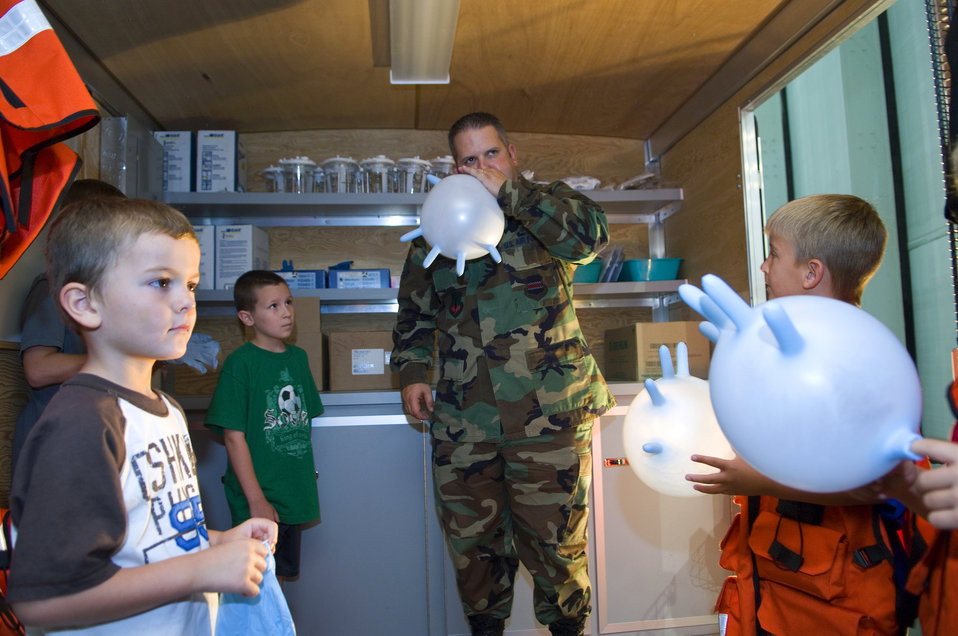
Air Force Week mixes past, present, future at museum

Tech. Sgt. Shane Doxdon makes glove balloons for children visiting the Strategic Air and Space Museum during Air Force Week in the Heartland Aug. 13 in Ashland, Neb. Museum officials hosted a day dedicated to the legacy of airpower providing special Air Force demonstration teams and displays. Sergeant Doxdon is a member of the 55th Medical Group from Offutt Air Force Base, Neb.